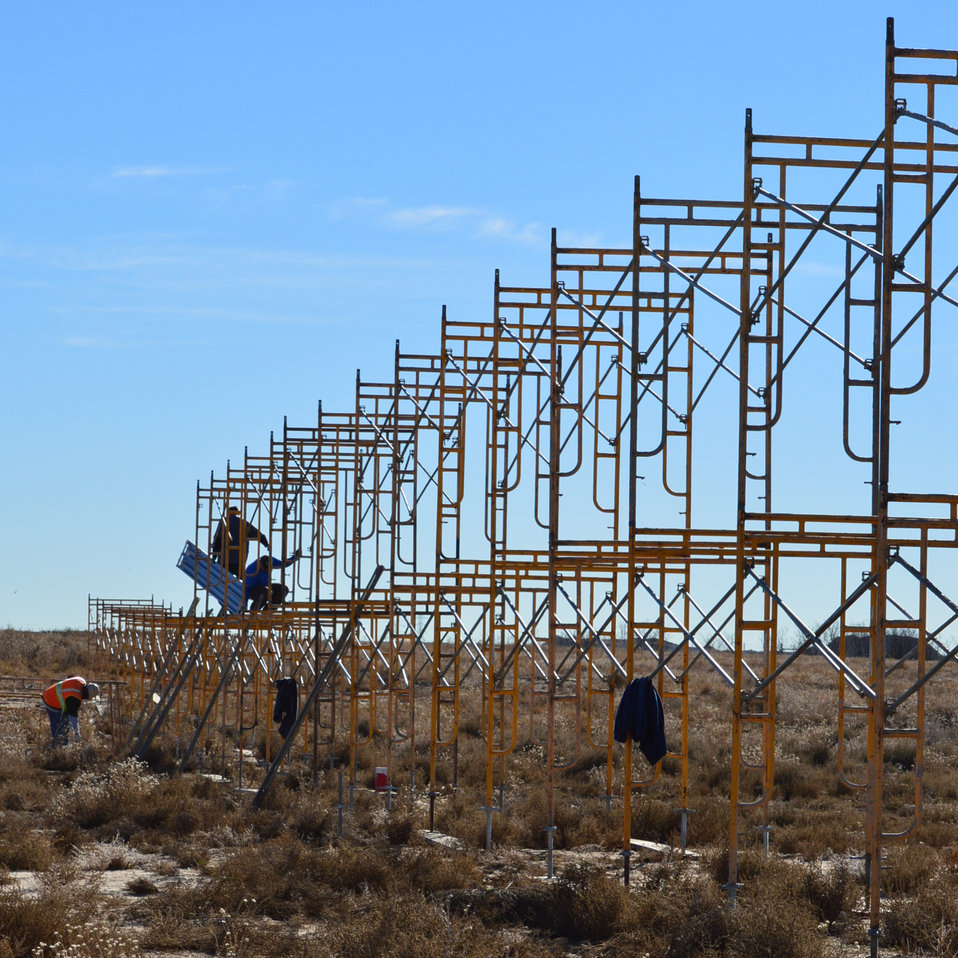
World Wildlife Fund (WWF) and International Fund for Animal Welfare (IFAW) constructing scaffolding which will display a life sized herd of elephants.